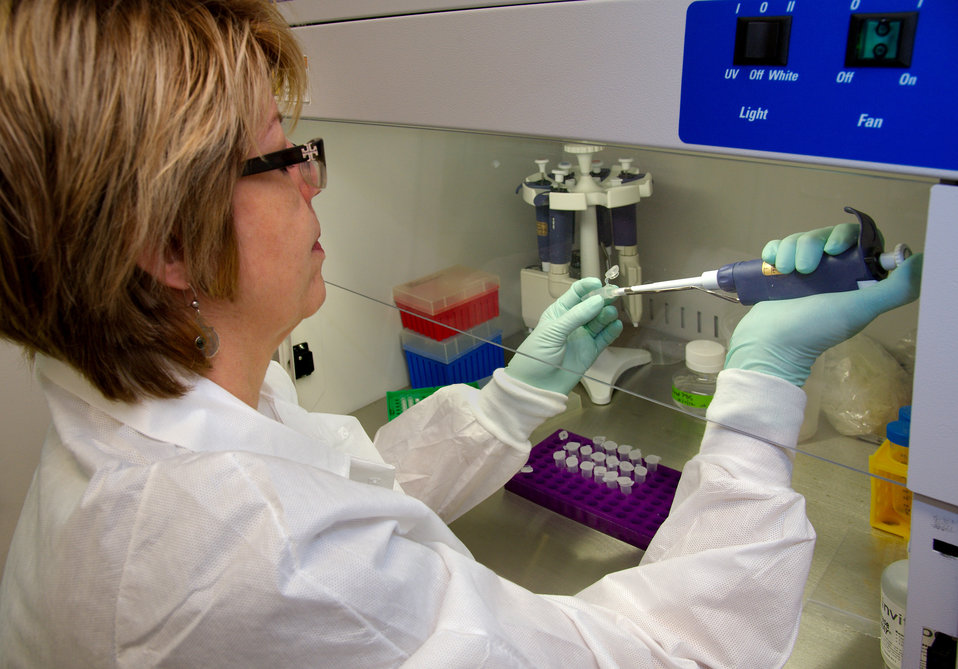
This image shows Centers for Disease Control and Prevention (CDC) scientist Christina Scheel processing spinal fluid samples for molecular testing during the 2012 multistate fungal meningitis outbreak investigation.